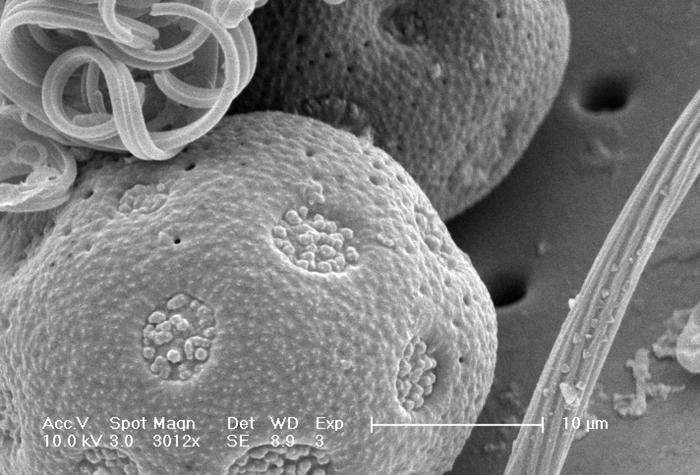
This scanning electron micrograph (SEM), highly magnified at 3012x, revealed the microscopic debris that was attached to the exoskeletal surface of an unidentified insect. These particulates were predominantly made up of vegetative matter such as pollen granules, and disintegrated plant tissues. Also note the few sensorial hairs in the field of view.